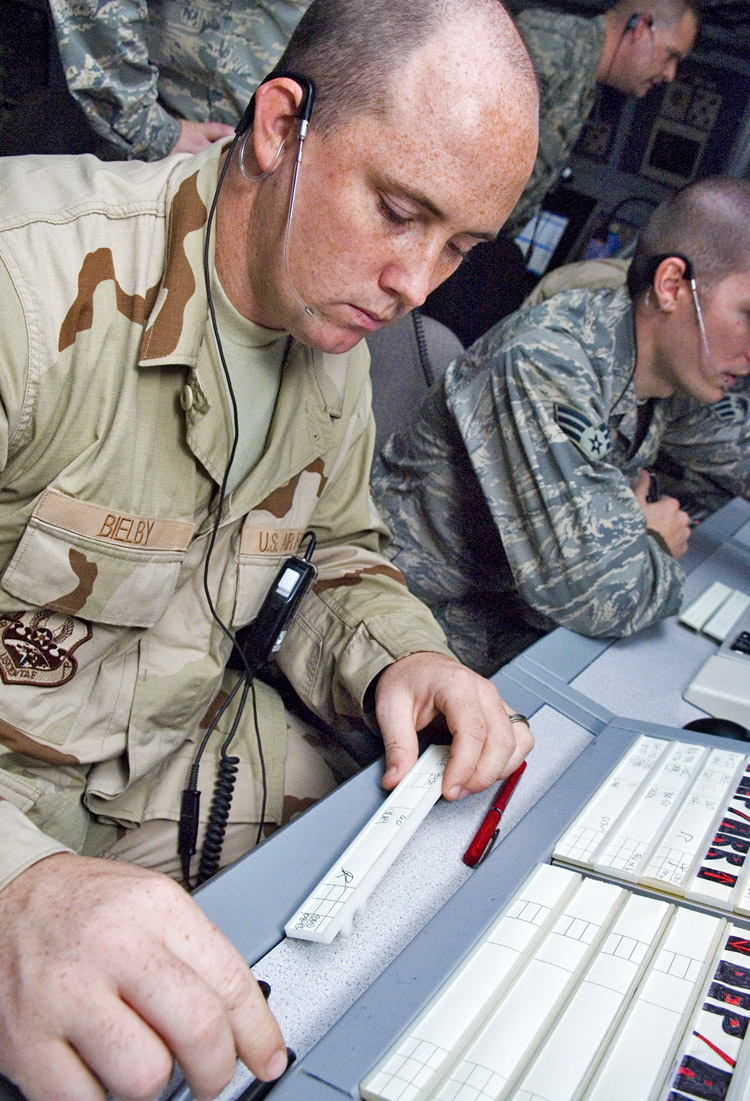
Balad radar air traffic controllers run skies of Iraq

Senior Airman Bobby Bielby works in the departure assistant position at Balad Air Base, Iraq. The assist position marks flight-data strips and coordinates aircraft movement with other facilities. Airman Bielby is a 332nd Expeditionary Operations Support Squadron air traffic controller deployed from Whiteman Air Force Base, Mo.